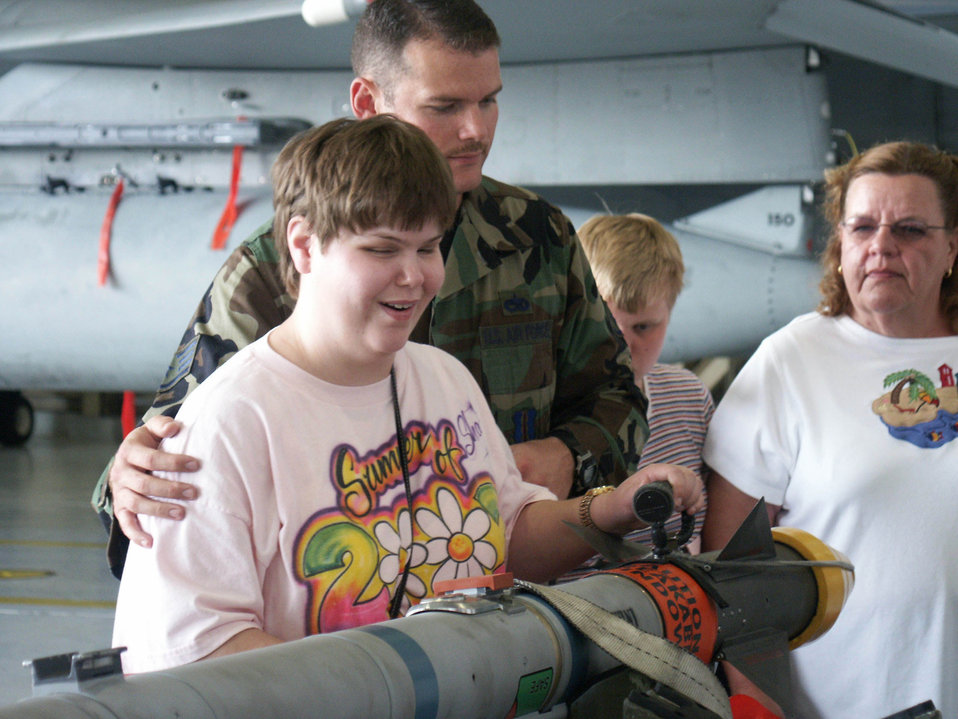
Tour group gets feel for Air Force mission

EGLIN AIR FORCE BASE, Fla. -- Staff Sgt. Tracy Myers lets Shannon Bowen touch an F-15 Eagle missile during her senior class' tour of the 33rd Fighter Wing here April 26. The class is from the Tennessee School for the Blind in Nashville. Sergeant Myers is an instructor with the 33rd Maintenance Operations Squadron.